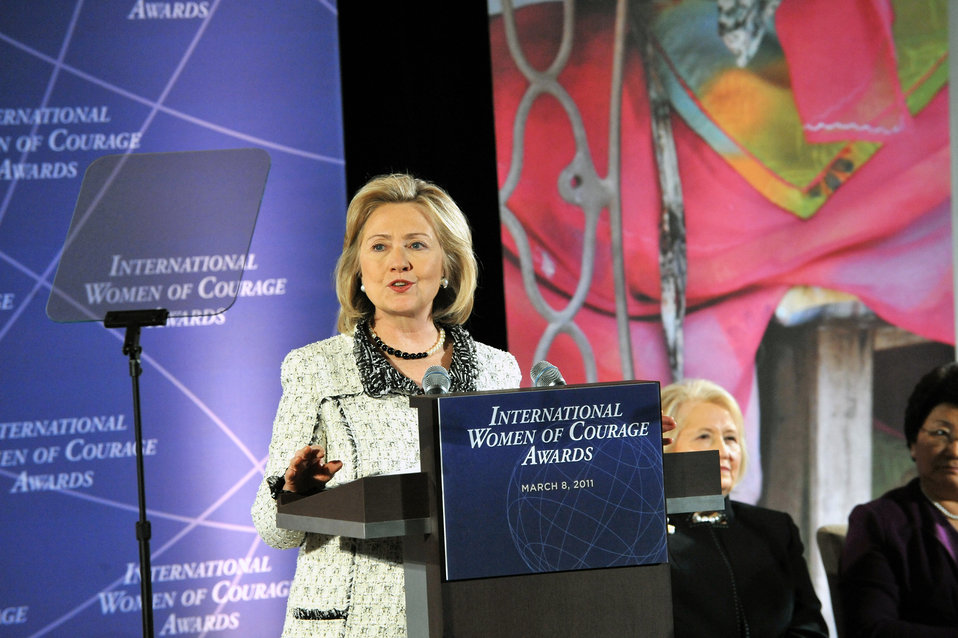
Secretary Clinton Delivers Remarks at 2011 International Women of Courage Awards Ceremony

U.S. Secretary of State Hillary Rodham Clinton delivers remarks at the 2011 International Women of Courage Awards Ceremony in commemoration of the 100th Anniversary of International Women’s Day, at the U.S. Department of State in Washington, D.C., on March 8, 2011.